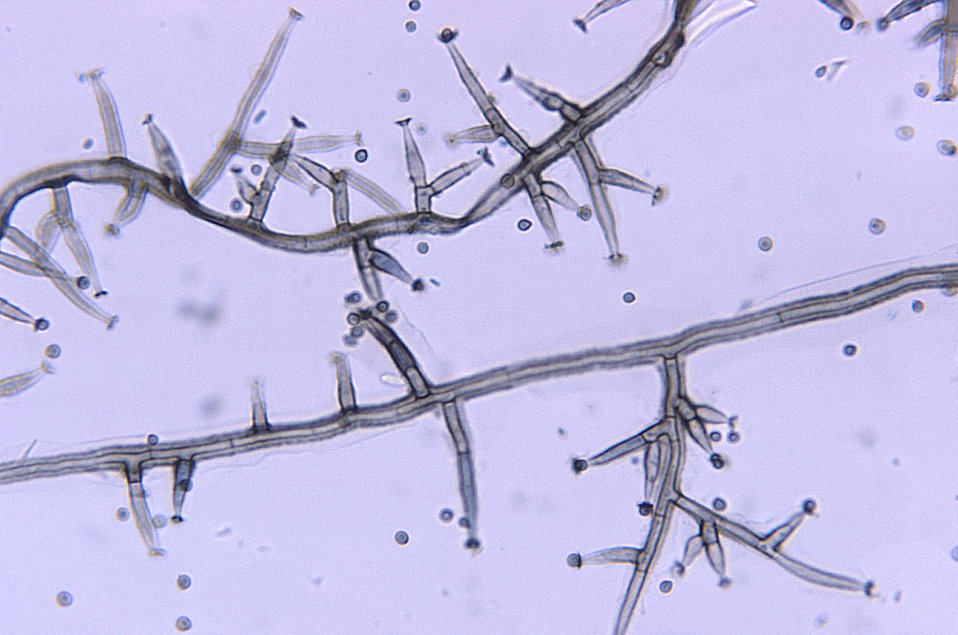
Magnified 500X, this photomicrograph revealed some of the ultrastructural morphology displayed by the dematiaceous (pigmented) filamentous fungus, Phialophora richardsiae.